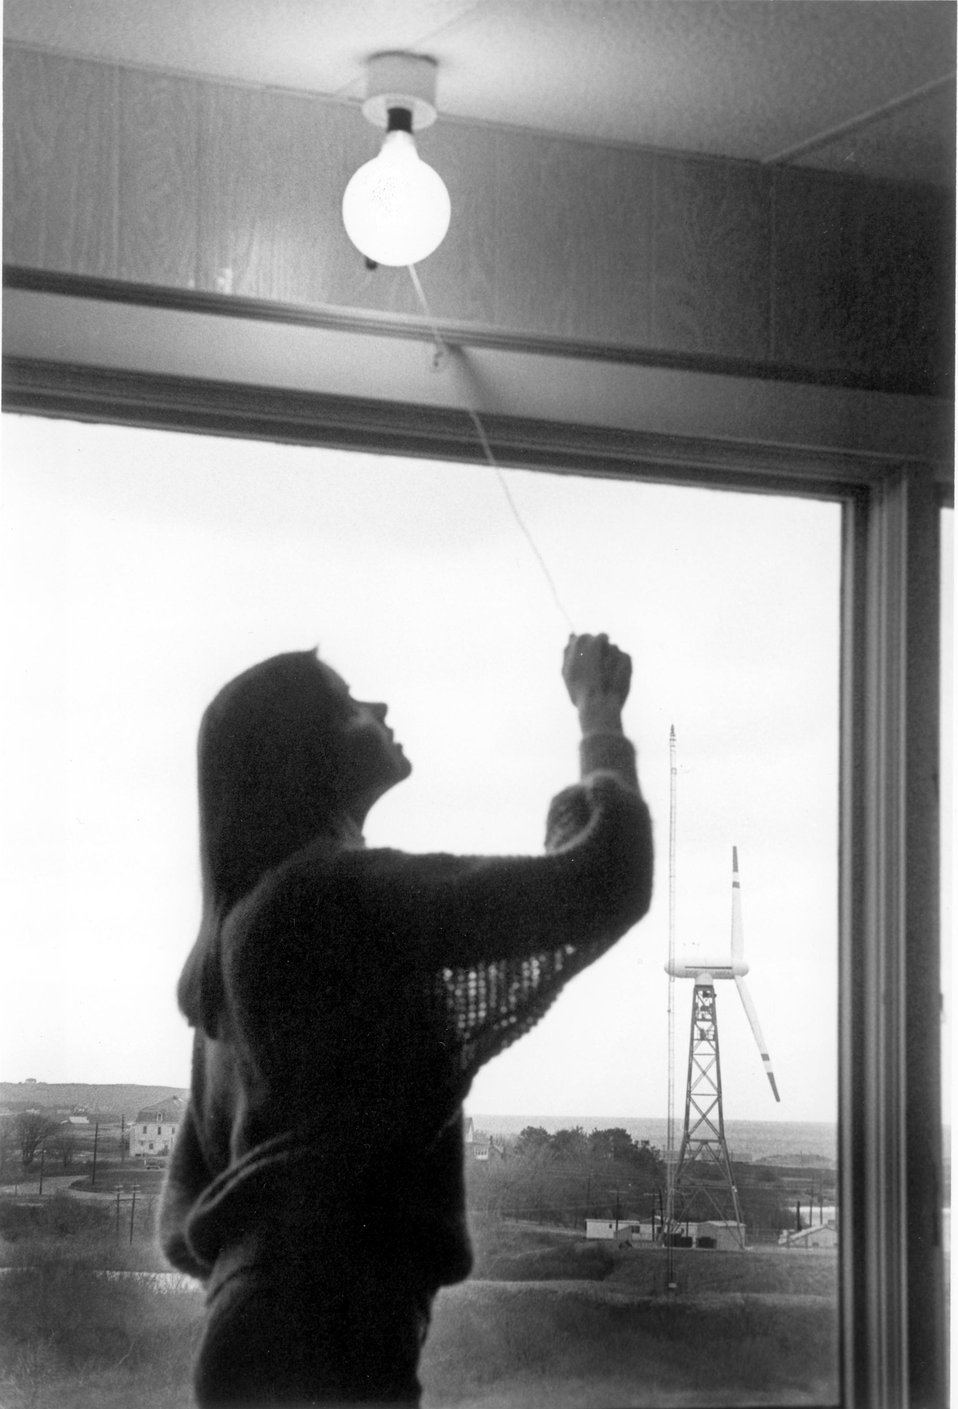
Block Island, Rhode Island wind turbine generates electricity for the community of Block Island. c. 1980